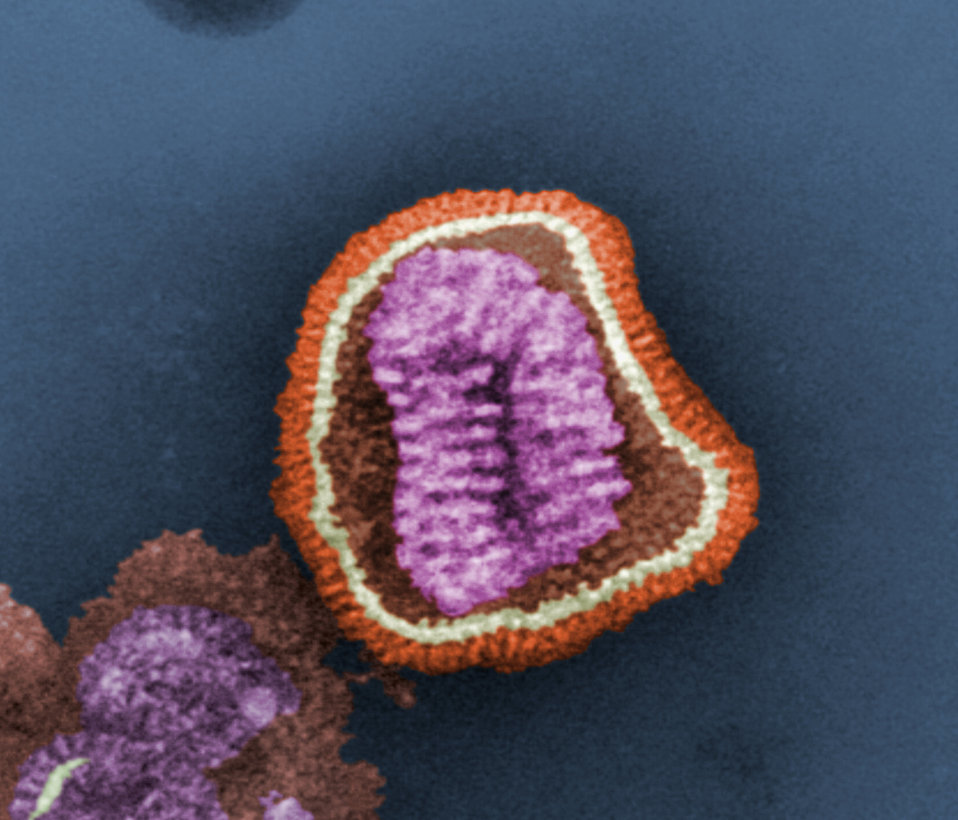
This negative-stained transmission electron micrograph (TEM) depicts the ultrastructural details of an influenza virus particle, or 'virion'. A member of the taxonomic family Orthomyxoviridae, the influenza virus is a single-stranded RNA organism.The flu is a contagious respiratory illness caused by influenza viruses. It can cause mild to severe illness, and at times can lead to death. The best way to prevent this illness is by getting a flu vaccination each fall.Every year in the United States, on average:- 5% to 20% of the population gets the flu- more than 200,000 people are hospitalized from flu complications, and- about 36,000 people die from flu. Some people, such as older people, young children, and people with certain health conditions, are at high risk for serious flu complications. See PHIL 8430 for a black and white version of this image.